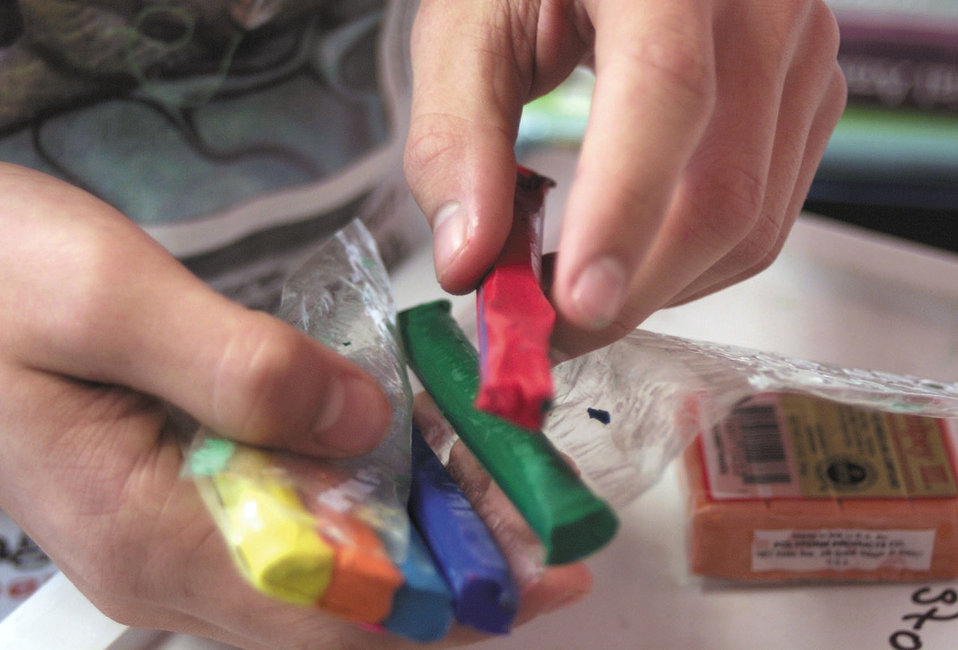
Building

SPANGDAHLEM AIR BASE, Germany -- Steven Watts, a 13-year-old Spangdahlem Middle School student here, displays similar clay used to create the animated characters in his short film,